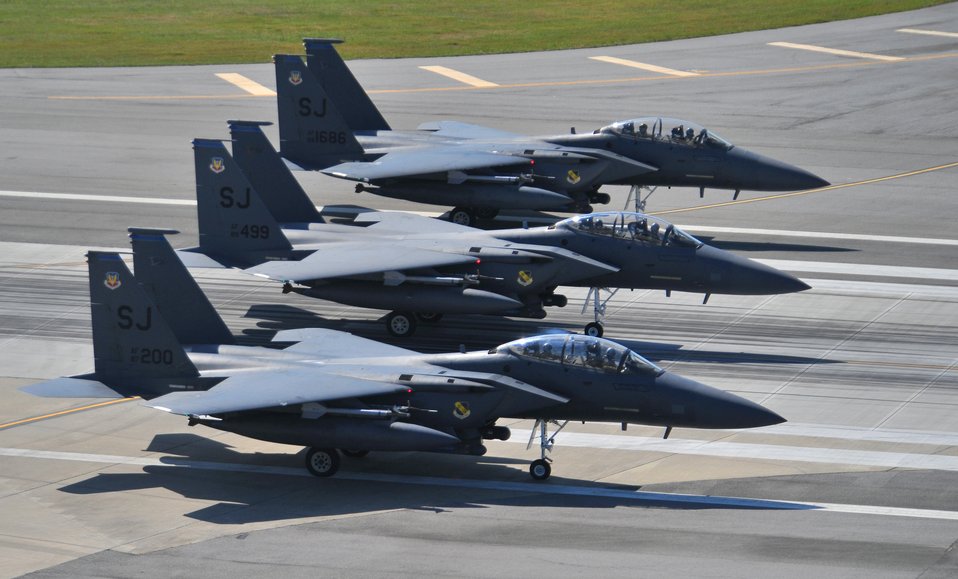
Mustang Mayhem

F-15E Strike Eagles of the 4th Fighter Wing perform an